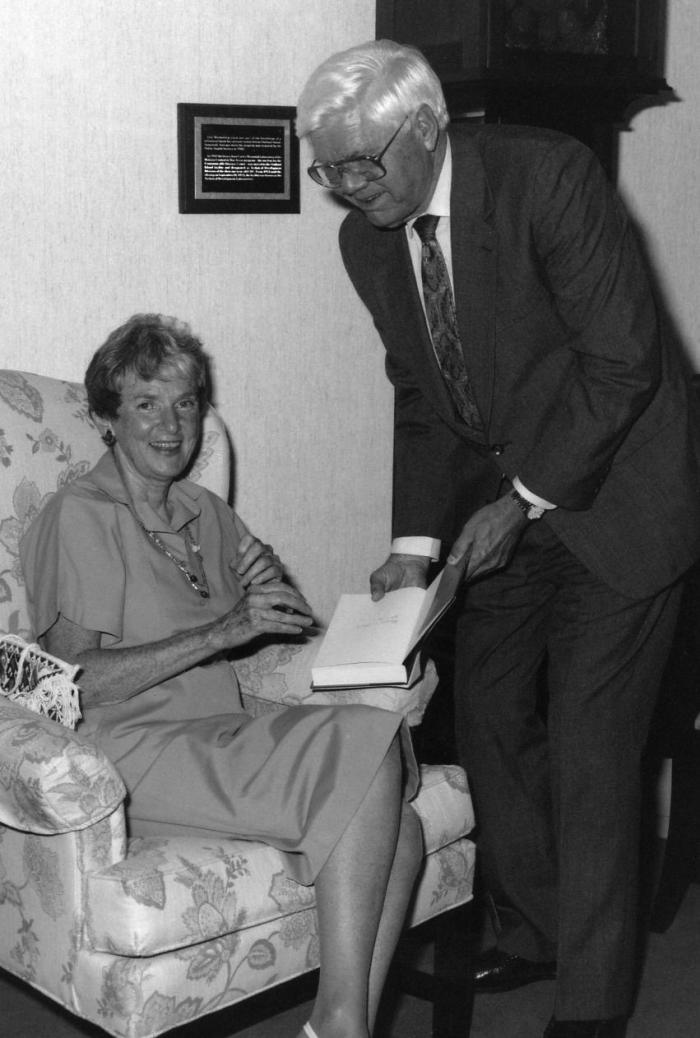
This 1992 photograph showed the Centers for Disease Control's William Watson (right) holding a copy of the book, "Sentinel for Health: A History of the Centers for Disease Control", written by seated historian Dr. Elizabeth Etheridge.